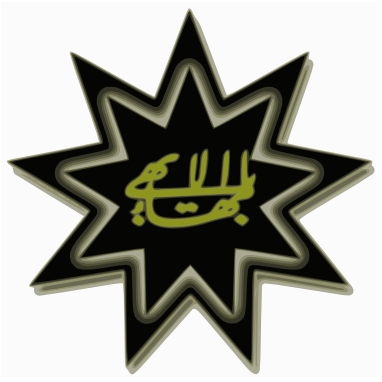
Bahai star